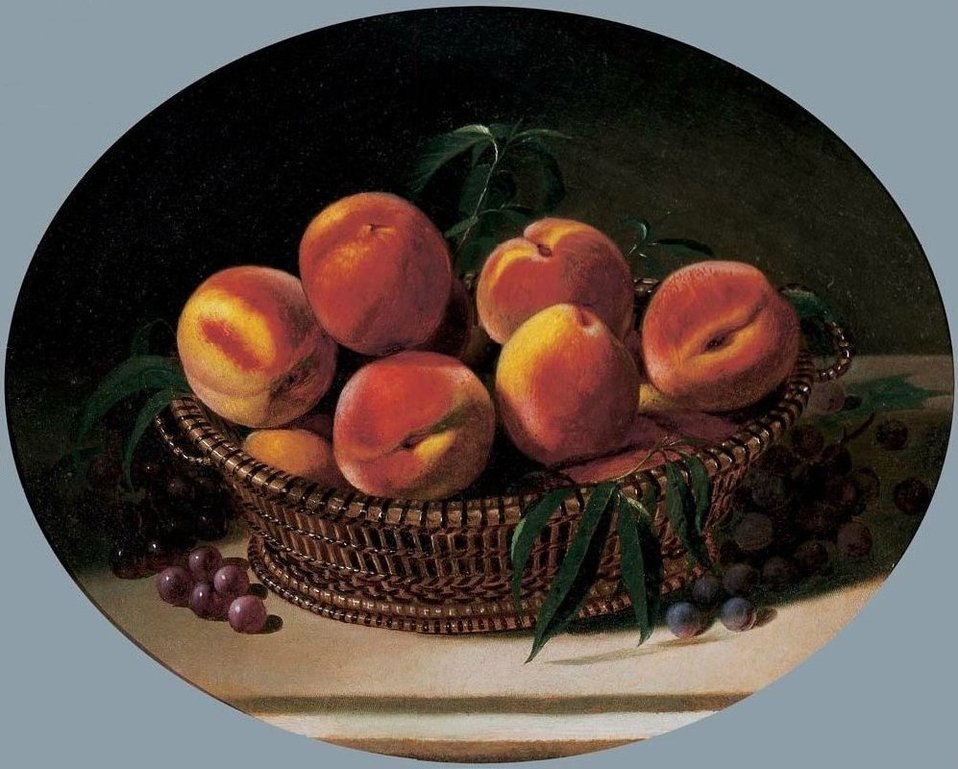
'A Basket of Peaches' painting by Edward Edmondson, Jr